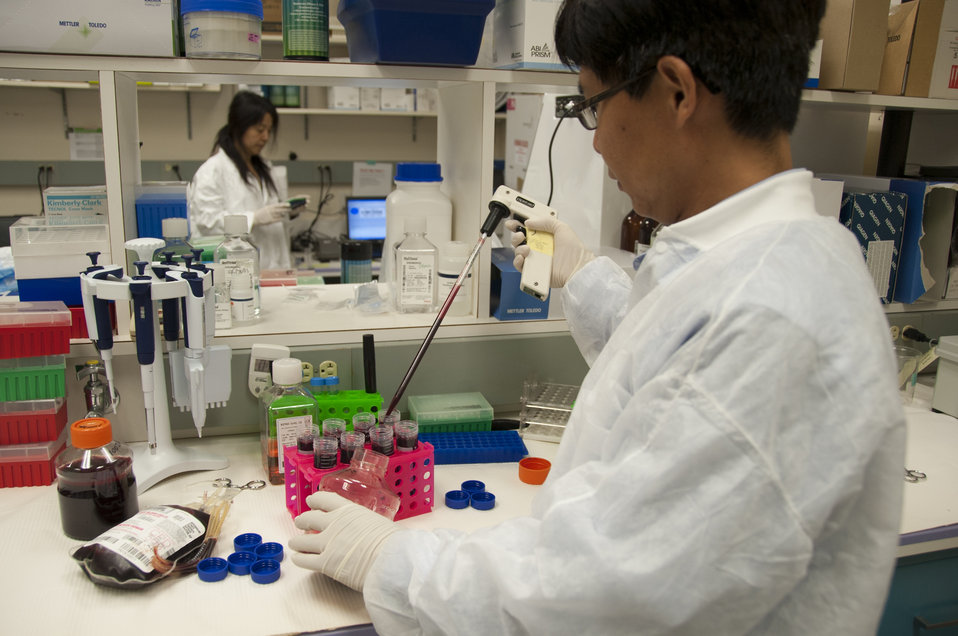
Blood Research: Saving Lives (8352)

Jason Liu, Ph.D., laboratory chief at FDA’s Office of Blood Research and Review, transferring blood to 50 ml tubes as he prepared to isolate blood components. A unit of whole blood can be separated, for example, into platelets and red blood cells. The separated components can be studied separately and can be used for different patients with different needs. FDA is responsible for the safety of our nation’s blood supply and is at the forefront of evaluating and encouraging innovative technologies for protecting it.

Read this Consumer Update to learn more: Advances in Saving Lives with Blood